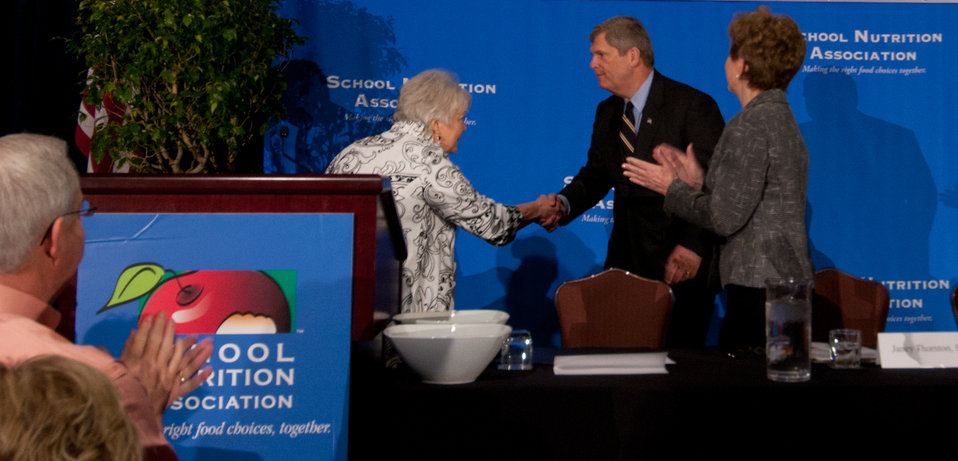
School Nutrition Association President Nancy Rice welcomes U.S. Department of Agriculture Secretary Tom Vilsack to the podium, during the School Nutrition Association’s closing general session of their 39th annual Legislative Action Conference at the J.W. Marriott Hotel in Washington, D.C., on Wednesday, March 9, 2011. The theme of the Secretary Vilsack’s speech was “The Realities of Implementing New Meal Patterns and Operational Requirements.”